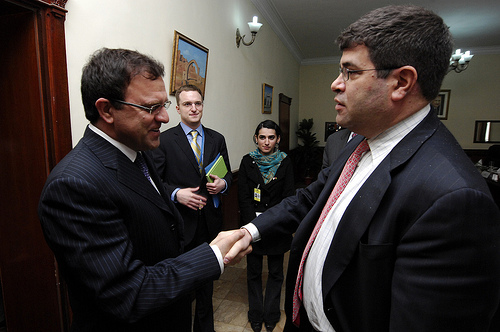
Wolin and Afghan Finance Minister Zakhilwal

On Thursday, February 11, Deputy Secretary Wolin met in Kabul with Afghan Finance Minister Zakhilwal.